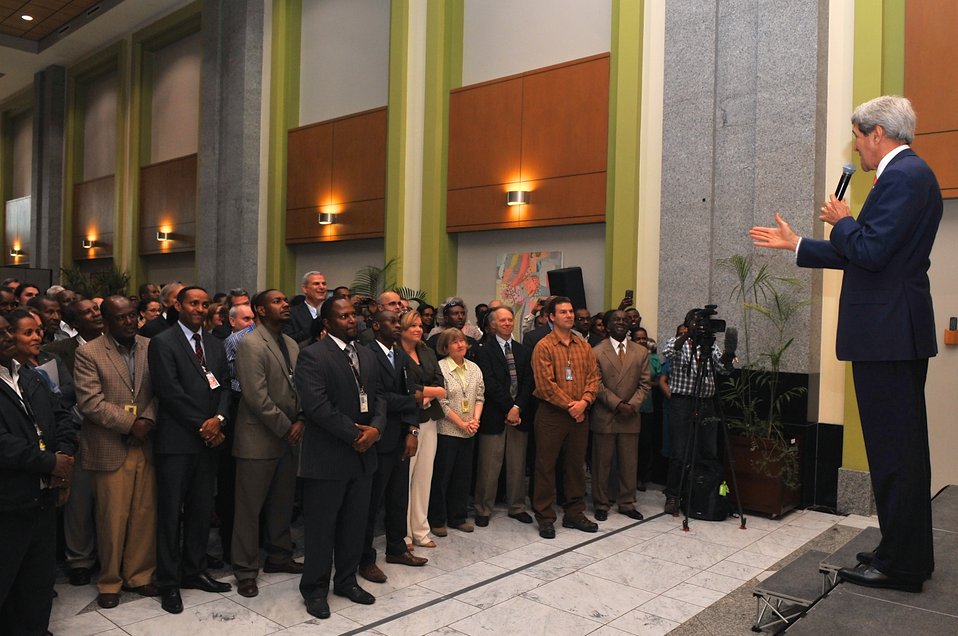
Secretary Kerry Announces Raise During Meet-and-Greet at Embassy Addis Ababa

U.S. Secretary of State John Kerry announces a raise for locally hired workers during a meet-and-greet with the staff of Embassy Addis Ababa and the U.S. delegation to the African Union on May 1, 2014.